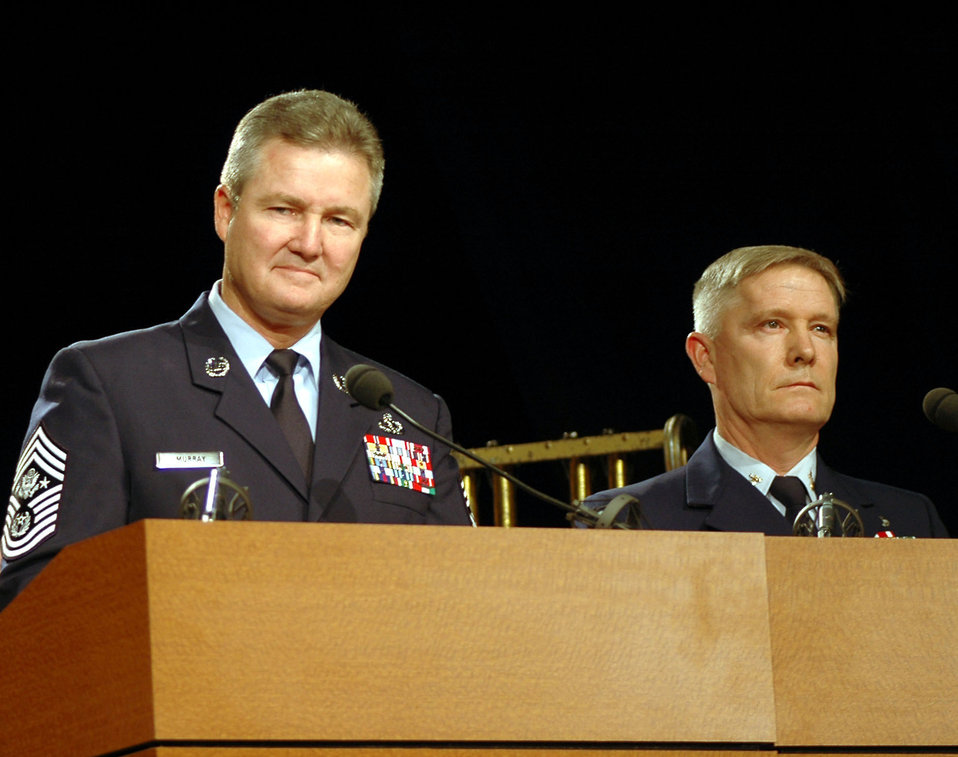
Tribute to the troops

WASHINGTON (AFPN) -- Chief Master Sergeant of the Air Force Gerald R. Murray and U.S. Coast Guard Master Chief Petty Officer Jeffrey D. Smith narrate selections between musical acts during a tribute to America's armed forces here Feb. 6. Entertainers, musicians, journalists and senior military leaders gathered at the Pentagon auditorium for the two-hour event, titled